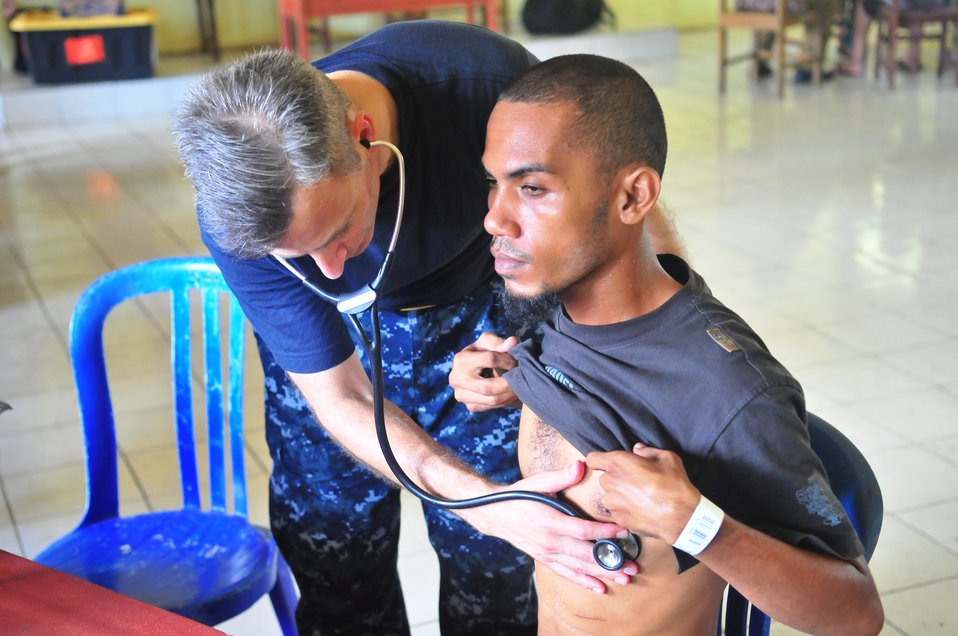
Lt. Cmdr. (Dr.) Ira Nash Listens to an Indonesian Man’s Heartbeat

Lt. Cmdr. (Dr.) Ira Nash, currently embarked with the Military Sealift Command hospital ship USNS Mercy (T-AH 19), listens to an Indonesian man’s heartbeat during a medical civic action program in support of Pacific Partnership 2010 in Tobelo, Indonesia, on July 15, 2010. Pacific Partnership 2010 is the fifth in a series of annual U.S. Pacific Fleet endeavors conducted in Indonesia as a disaster relief exercise to strengthen regional partnerships.